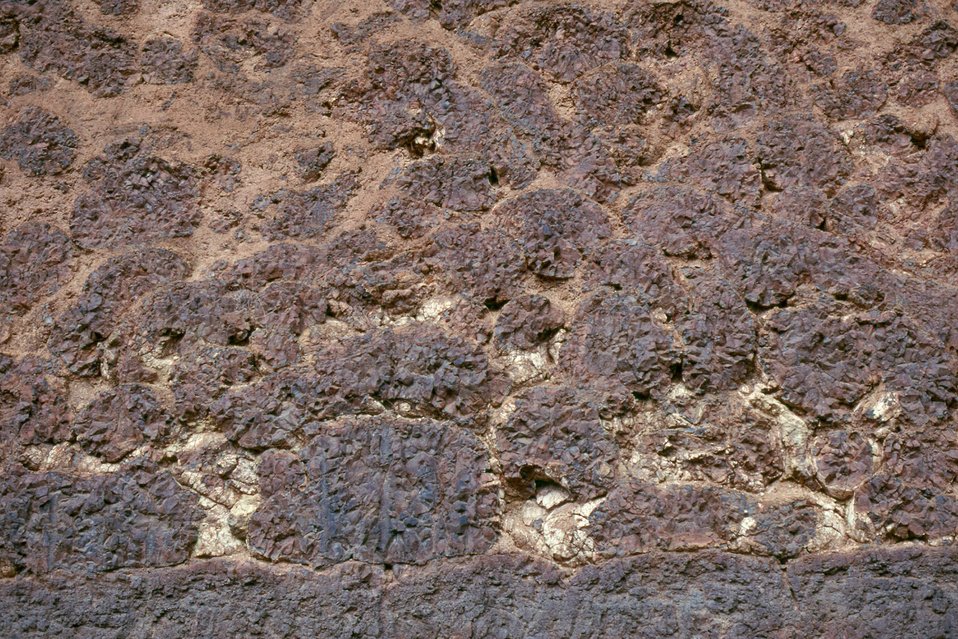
Grangeville Pillow Basalt Cottonwood Field Office UCSC Upper Columbia Salmon Clearwater District